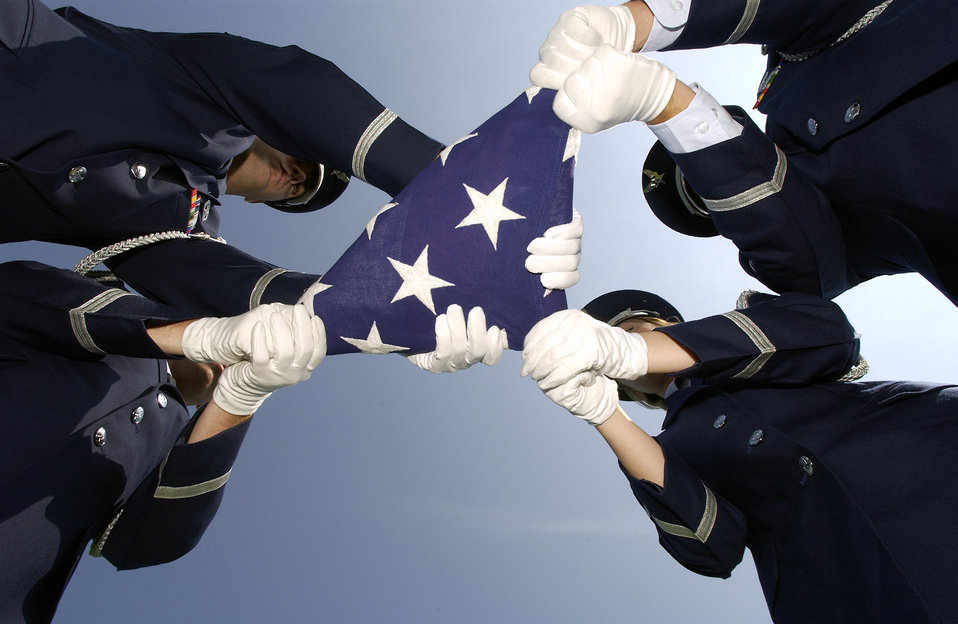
Practicing perfection

MCGUIRE AIR FORCE BASE, N.J. -- The McGuire AFB Honor Guard completes folding the U.S. flag during training. The Honor Guard trains eight hours a day for miltary funerals and base functions. The 30-member team covers a four-state region encompassing 78,000 square miles.